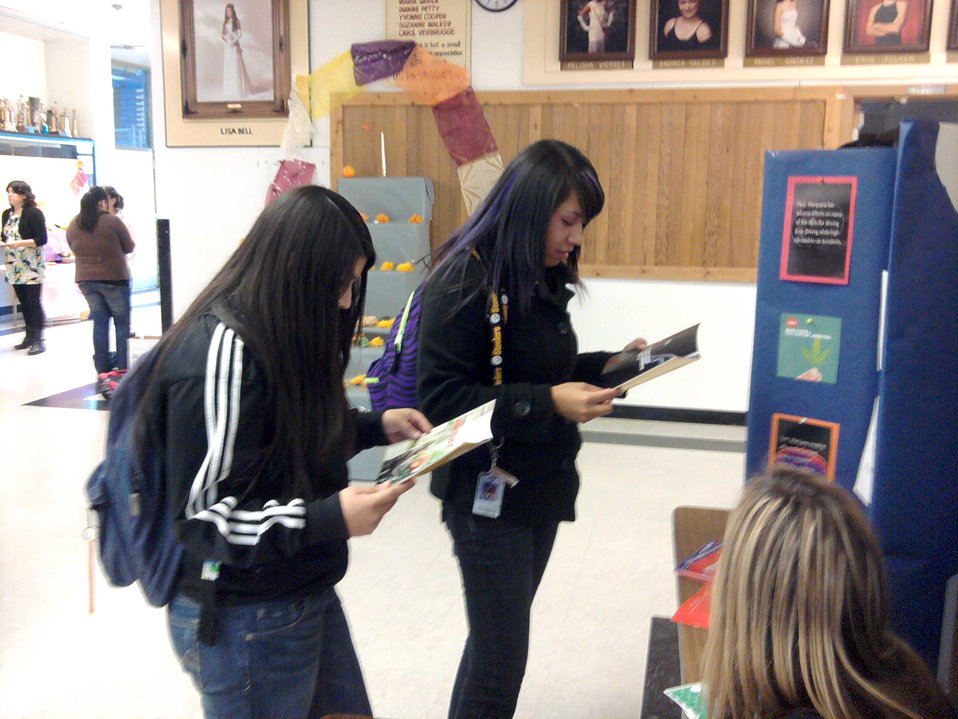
Wapato High school participates by having a “Question of the Day” contest to see which of the 2 lunches could answer the most drug facts questions correctly.